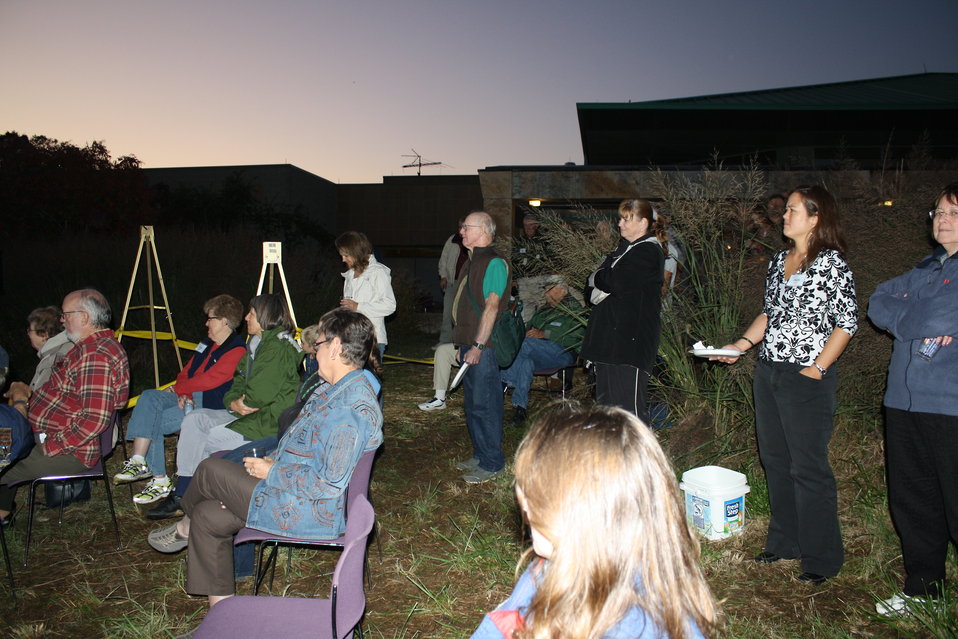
Patuxent Research Refuge 75th Anniversary

Symposium attendees told stories around a campfire.